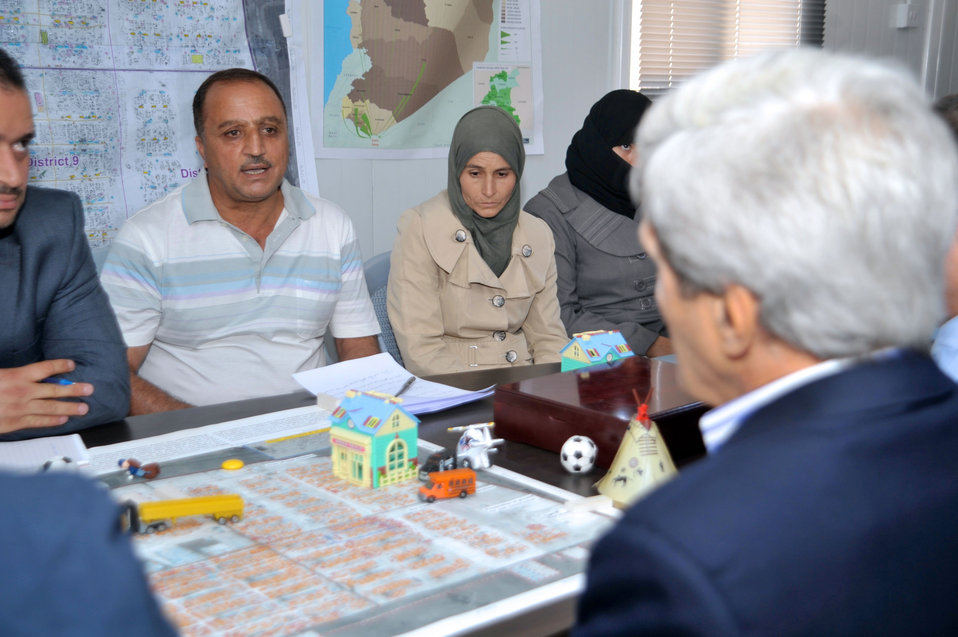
Secretary Kerry Speaks With Syrian Refugees at the Za'atri Refugee Camp

A Syrian refugee, who was not identified by name, speaks to U.S. Secretary of State John Kerry as he visits the Za'atri Refugee Camp in Jordan on July 18, 2013.